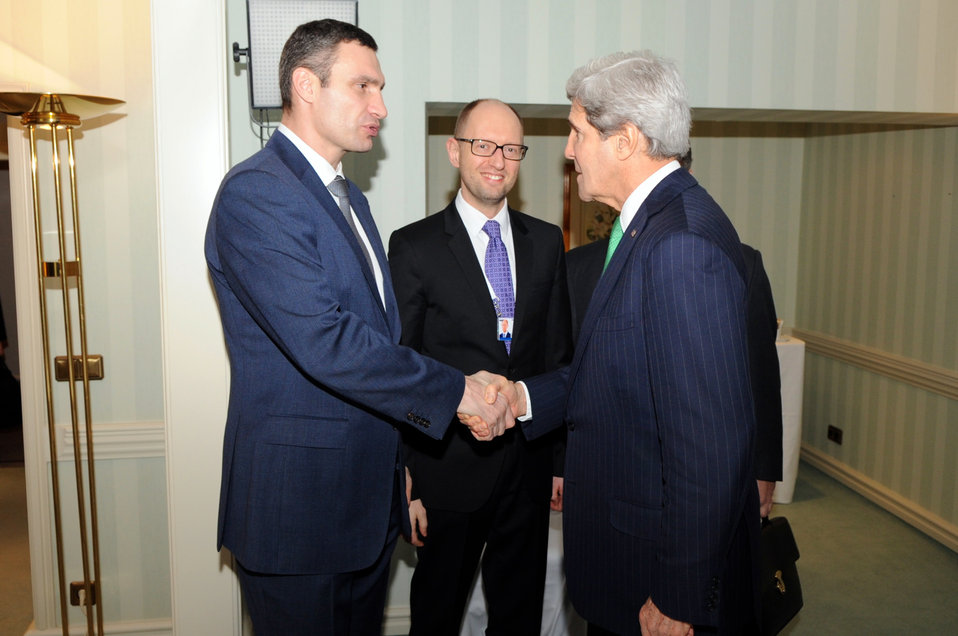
Secretary Kerry Meets UDAR Party's Klychko Before Session with Ukranian Opposition Leaders

U.S. Secretary of State John Kerry shakes hands with Vitali Klychko of the UDAR Party before a meeting with Ukrainian opposition leaders on the sidelines of the Munich Security Conference in Munich, Germany, on February 1, 2014.